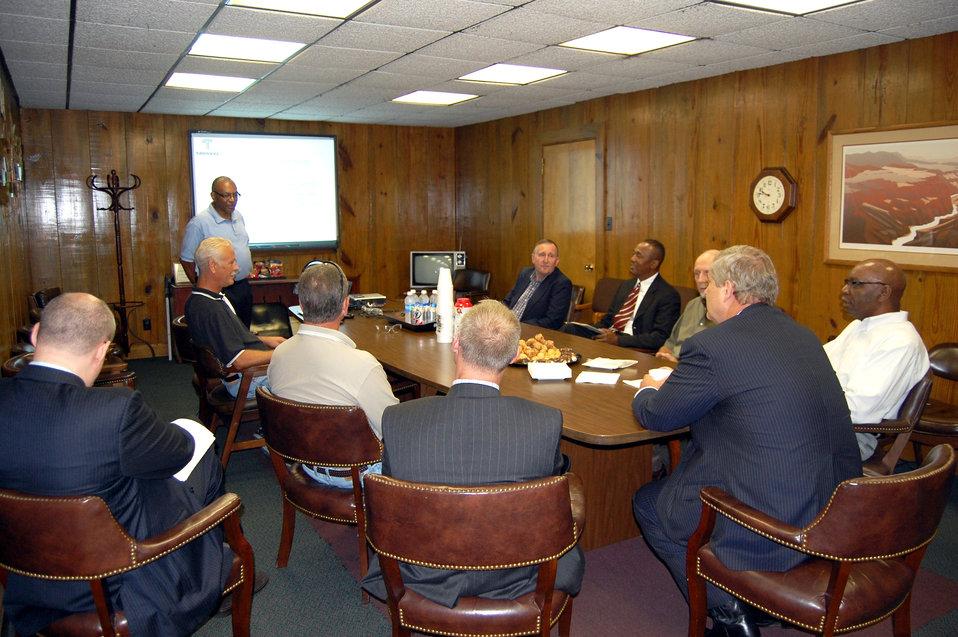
Tarheel Plastics COO/CFO Joe Nelson brief Agriculture Secretary Tom Vilsack and other U.S. Department of Agriculture (USDA) officials on the history of Tarheel Plastics at the Tarheel Plastics Plant in Lexington, NC., on Friday, Sept. 7, 2012. Tarheel Plastics produces components for automobiles and a wide variety of household appliances, supplying parts to companies such as Frigidaire and Electrolux. The company is certified as a minority business enterprise (51 percent minority owned) and recently received a U.S. Department of Agriculture (USDA) Rural Development (RD) business loan guarantee that allowed them to refinance.